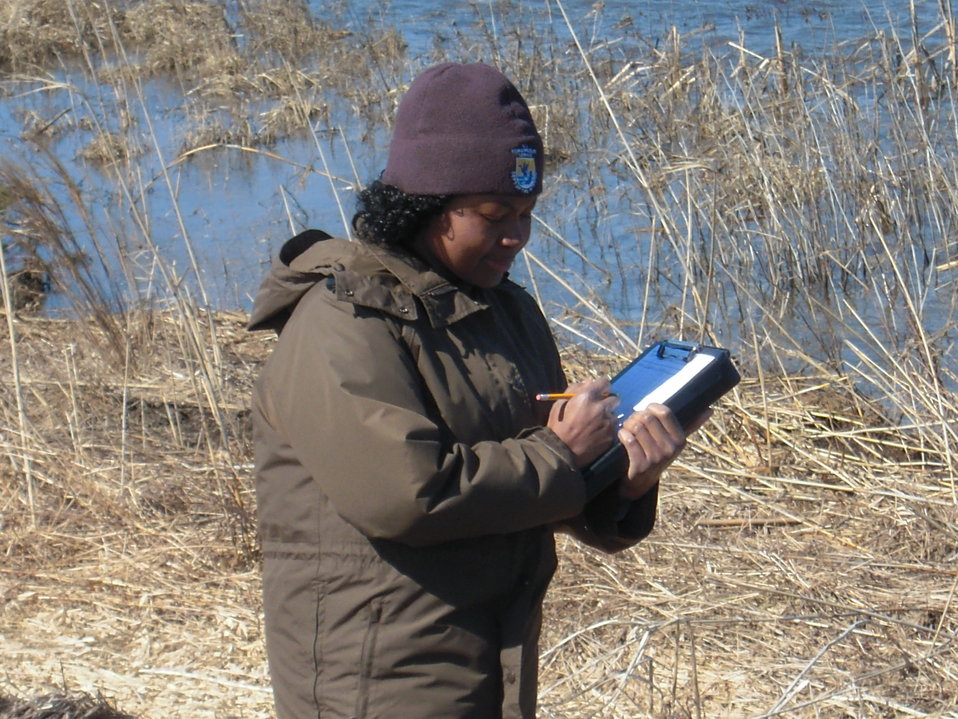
Monica Williams, Wildlife Biologist at Long Island Refuge Complex, in the field.